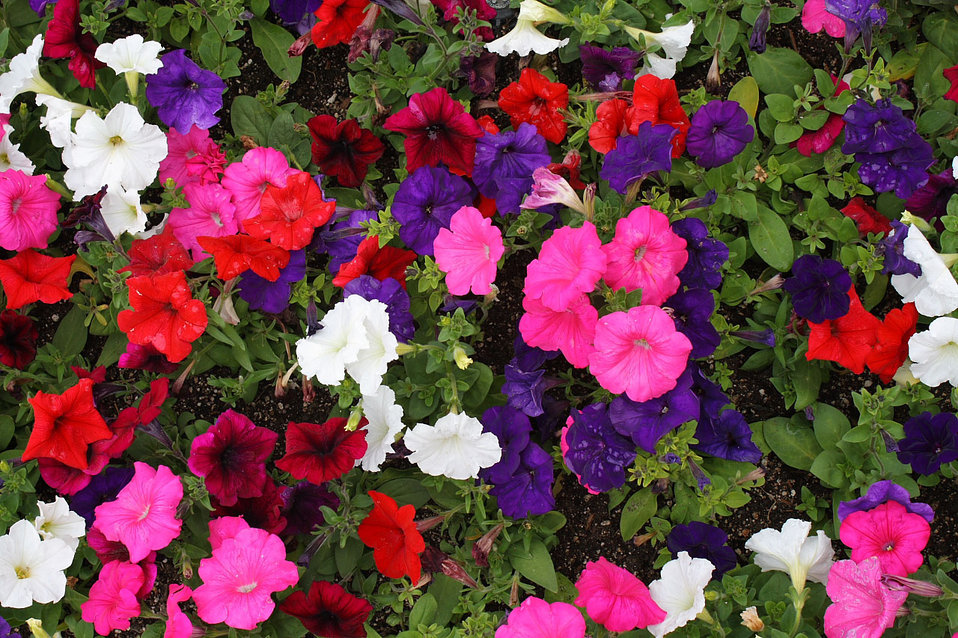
Petunia blooms background

Bed of multicolored petunia (petunia hybrida) blooms with foliage.